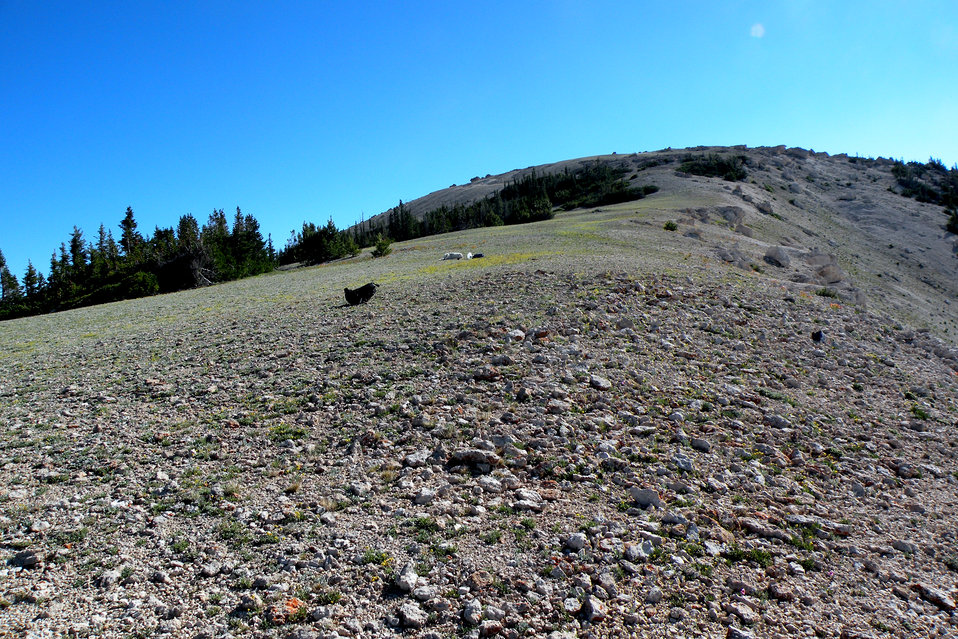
Heliotrope milkvetch habitat (Astragalus montii)

Heliotrope Mountain, UT. The Heliotrope milkvetch is endemic to apline areas in central Utah where it is found on windblown ridges between 10,500 ft. and 11,000 ft. in elevation.